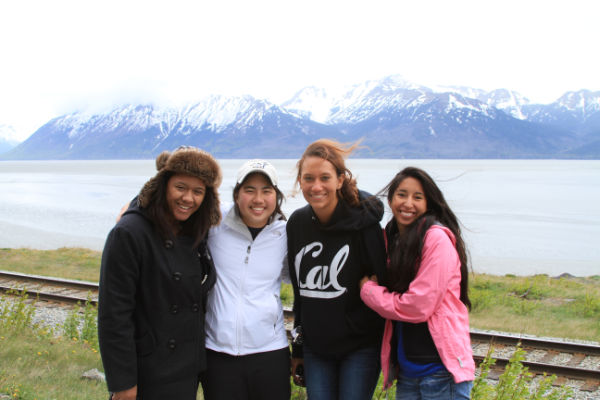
2012-Alaska Region-Work(10)

Alaska Career Discovery Internship Program is partnership with the Student Conservation Association to provide a 12 week internship to college freshman and sophomores to discover careers with the U.S. Fish and Wildlife Service.

Once in Alaska interns convened in Anchorage to acclimatize to the 'Far North' and receive more training including: bear safety, aviation safety, and more.